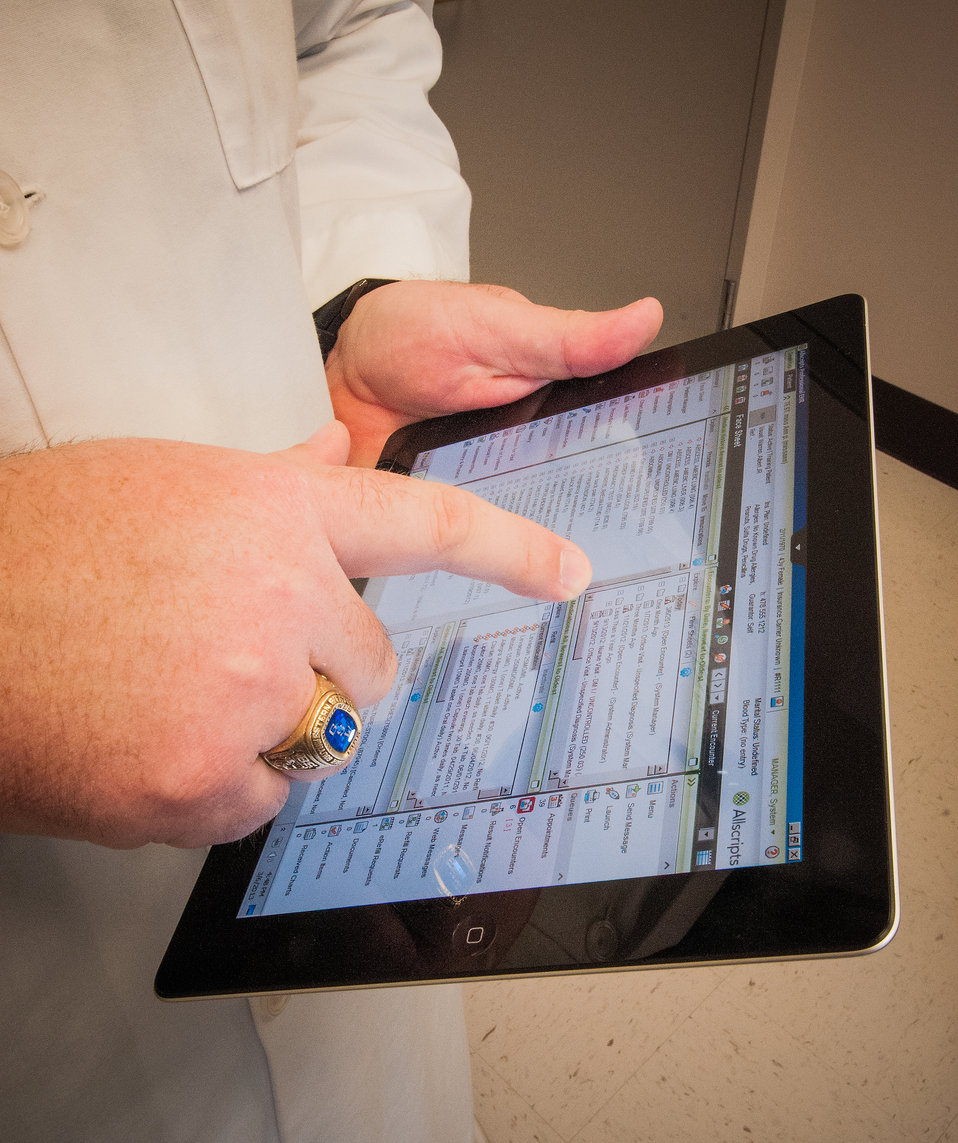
R.J. Taylor Memorial Hospital, Inc. Family Medicine Physician Dr. Albert Warren, MD reviews patients’ diagnosis, symptoms and records the information on an electronic tablet in Hawkinsville, GA on Mar. 6, 2013. Electronic medical records are essentially an electronic point-of-care capture of medical data that can be easily accessed and allow for integration across different health care settings by an embedded internet-work connected enterprise wide information systems. Such records may include a wide range of data in comprehensive or summary form, including demographics, medical history, medication allergies, immunization status, laboratory test results, radiology images and billing information. Patient data stored electronically is simplified for data gathering for running needed organizational, state, and federal reports, including demographics, medical history, and medication allergies. R.J. Taylor Memorial Hospital, Inc. purchased the Electronic Medical Records System under an incentive program by the Federal government through the U.S. Department of Agriculture (USDA) Rural Development (RD) Community Facilities Loan (CF) that ensures fiscally responsive access to superior quality integrated health care.